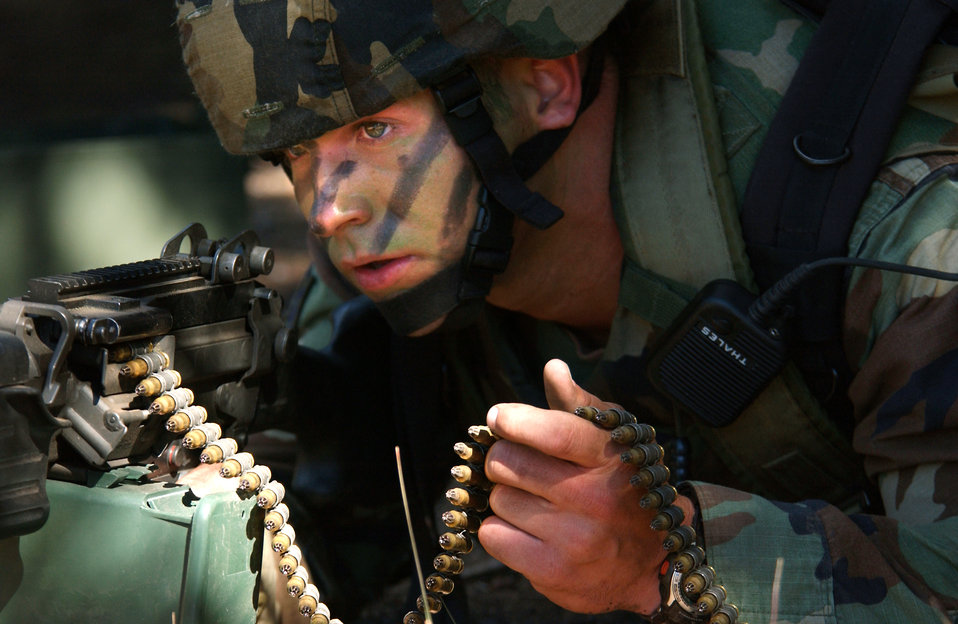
Searching for the challenge

FORT HUACHUCA, Ariz. -- Senior Airman Chris Clawson sets up a base of fire during a tactics training exercise here recently. Members of the U.S. Air Forces in Europe Defender Challenge team are spending three weeks here in preparation for the 2004 Defender Challenge competition. Defender Challenge, held at Lackland Air Force Base, Texas, is an annual security forces competition. Airman Clawson is assigned to the 39th Security Forces Squadron at Incirlik Air Base, Turkey.